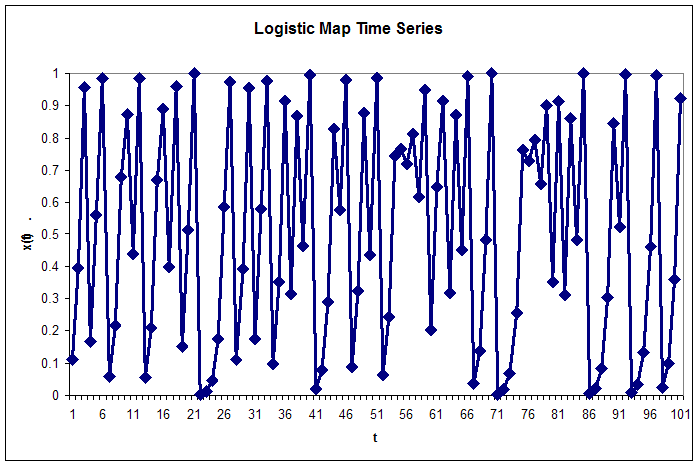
Radial basis function network - Figure 6: Logistic map time series. Repeated iteration of the logistic map generates a chaotic time series. The values lie between zero and one. Displayed here are the 100 training points used to train the examples in this section. The weights c are the first five points from this time series.